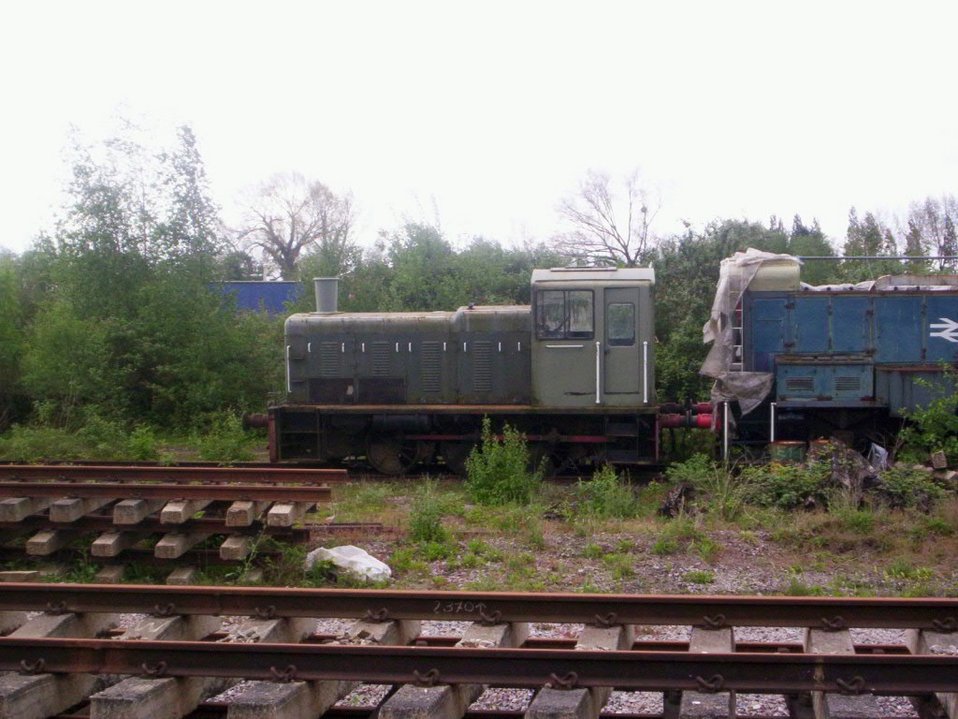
class 03, number 03128, stored at the Dean Forest Railway on the 7th May 2007. This loco is currently in a faded green livery, possibly B.R Green Author: Daniel Adkins (llamafish)